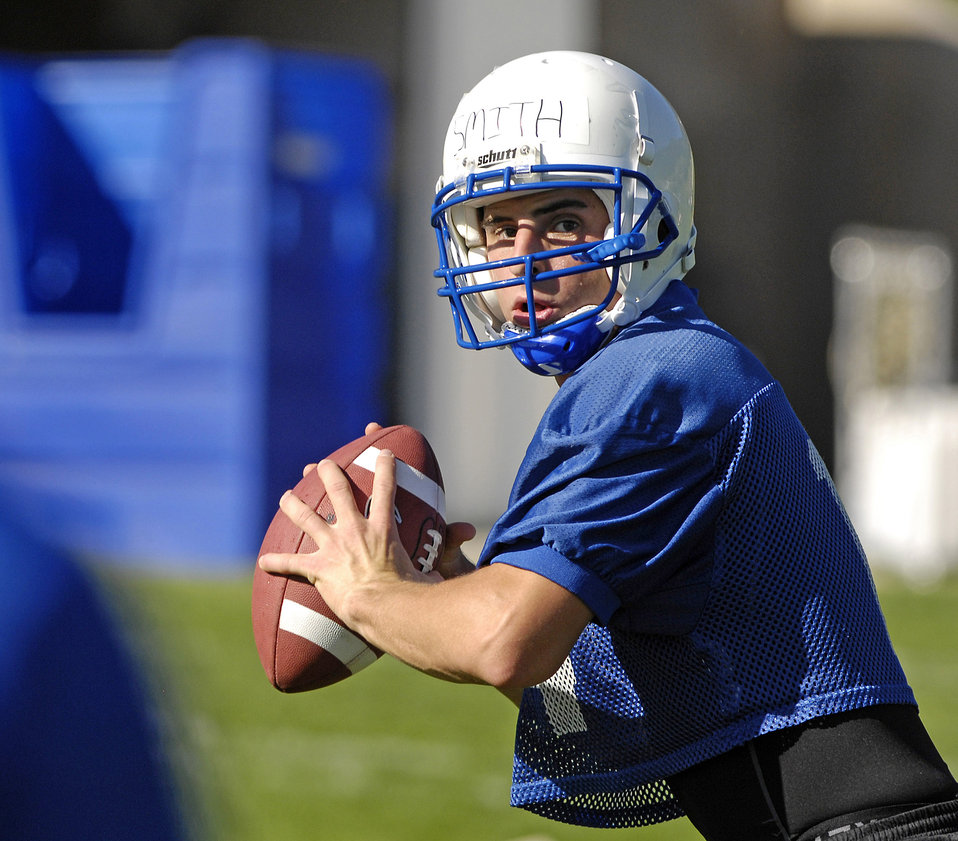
First day of football practice at the Academy

Quarterback Cadet 1st Class Shea Smith looks downfield for a receiver as the Falcons practice in preseason camp July 31 at the U.S. Air Force Academy in Colorado.